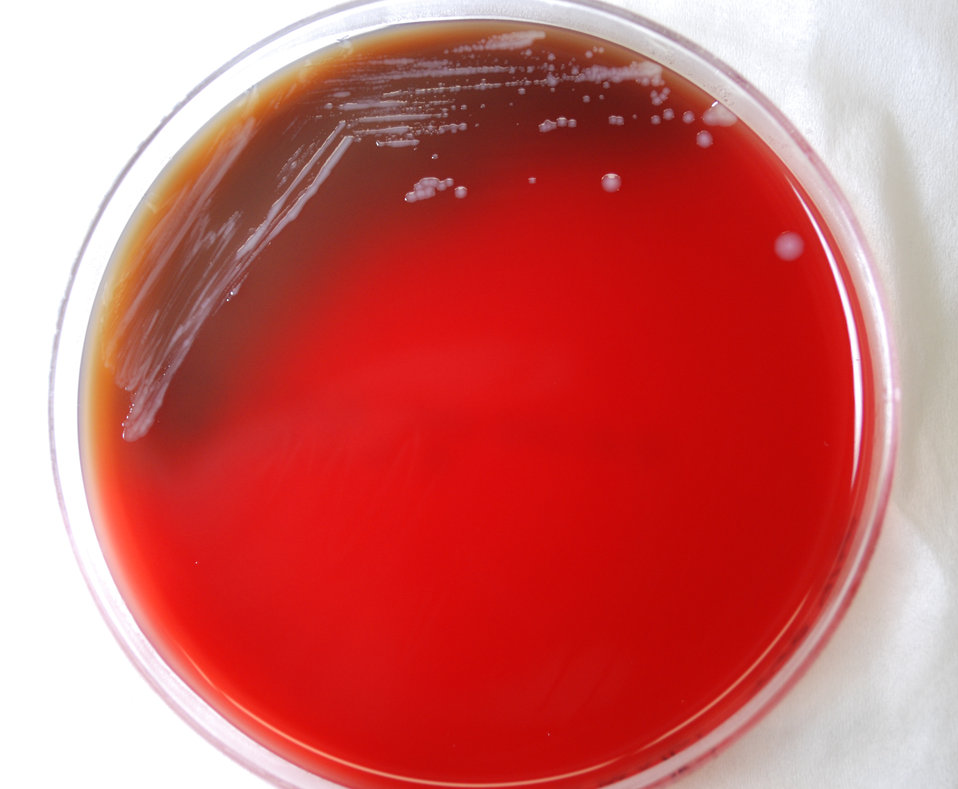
This photograph depicts the colonial morphology displayed by Gram-negative Burkholderia mallei bacteria, which was grown on a medium of sheep's blood agar (SBA), for a 72 hour time period, at a temperature of 37�C. See PHIL 12270 for closer view of these bacterial colonies.